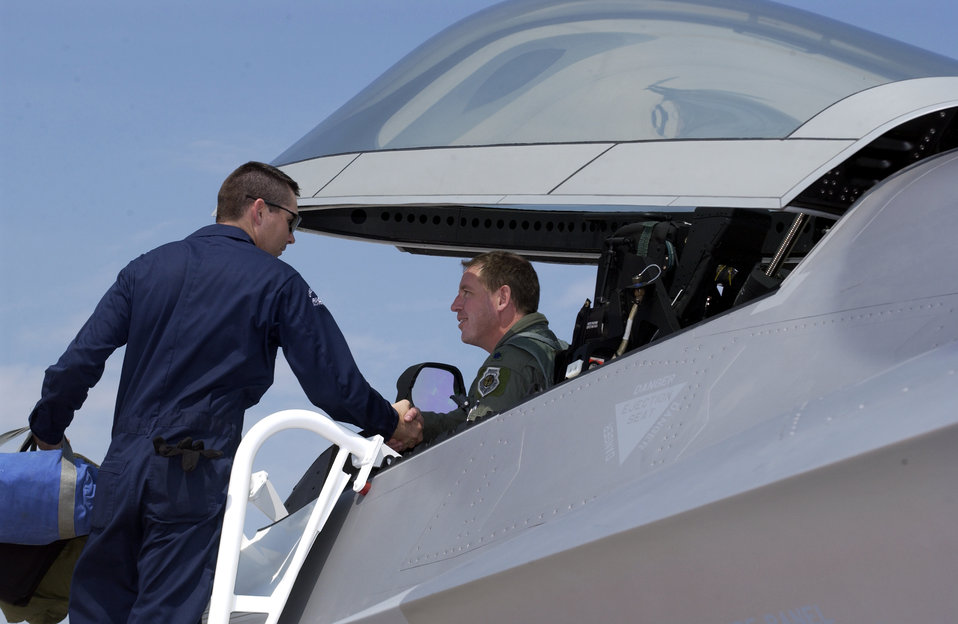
Special delivery

LANGLEY AIR FORCE BASE, Va. -- Staff Sgt. John Barr greets Lt. Col. James Hecker after delivering the first operational F/A-22 Raptor to its permanent home here May 12. This is the first of 26 Raptors to be delivered to the 27th Fighter Squadron. The Raptor program is managed by the F/A-22 System Program Office at Wright-Patterson Air Force Base, Ohio. Colonel Hecker is the squadron's commander, and Sergeant Barr is an F/A-22 crew chief.